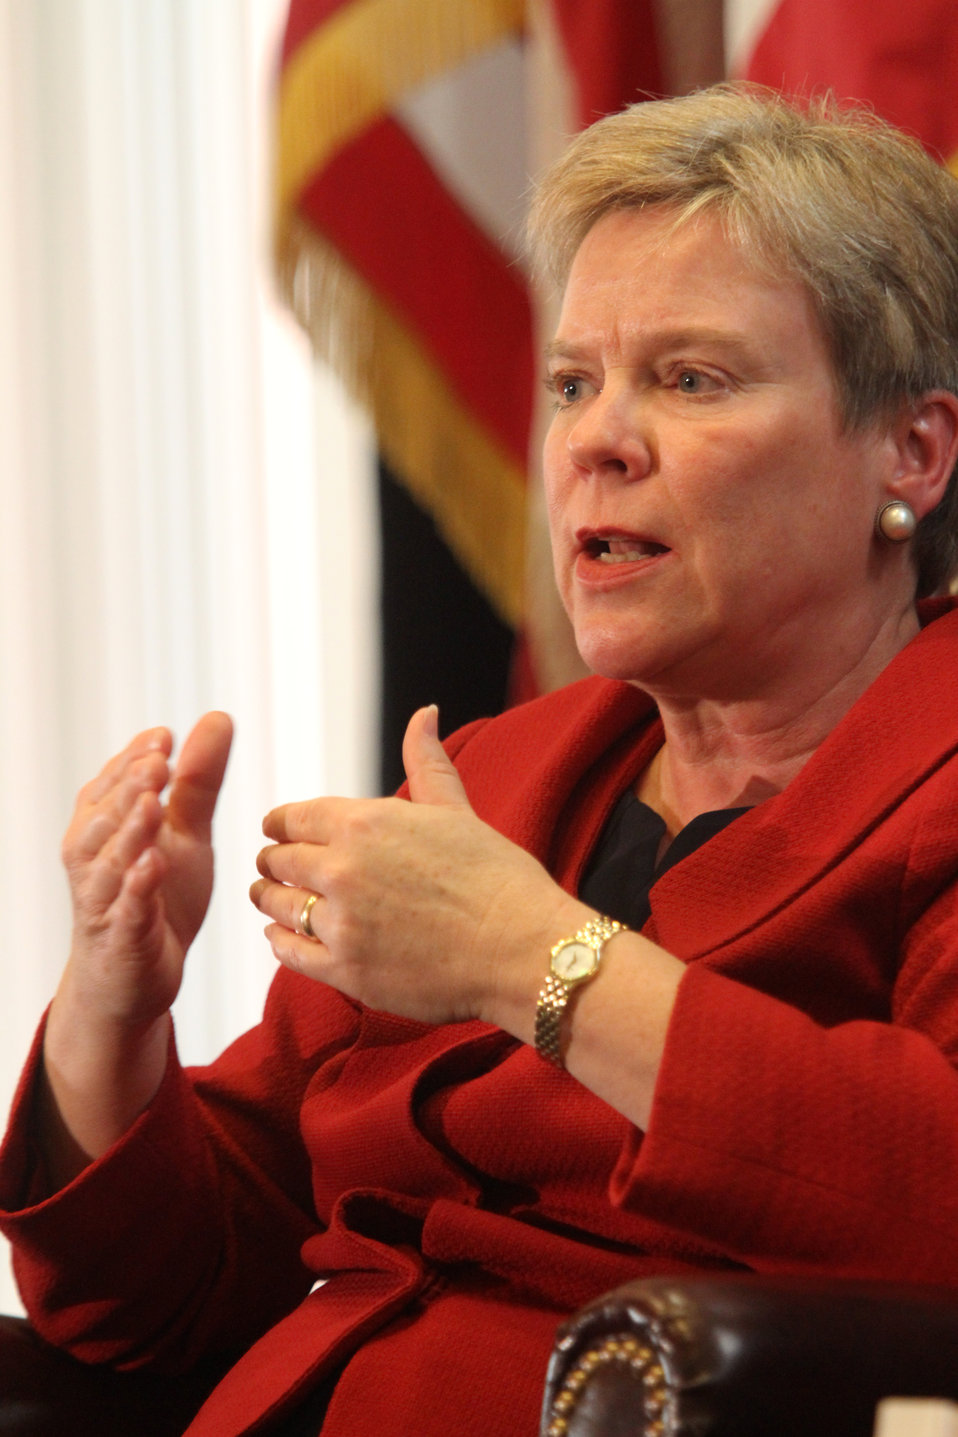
Assistant Secretary Gottemoeller Discusses Arm Control

Assistant Secretary of State for Arms Control, Verification and Compliance Rose Gottemoeller discusses 'Arms Control in the Information Age' at the Center for International Security and Cooperation (CISAC) in Stanford, California, on October 27, 2011.